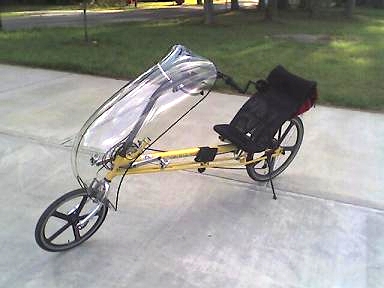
A RANS V2 Formula long wheelbase recumbent bicycle fitted with a fairing